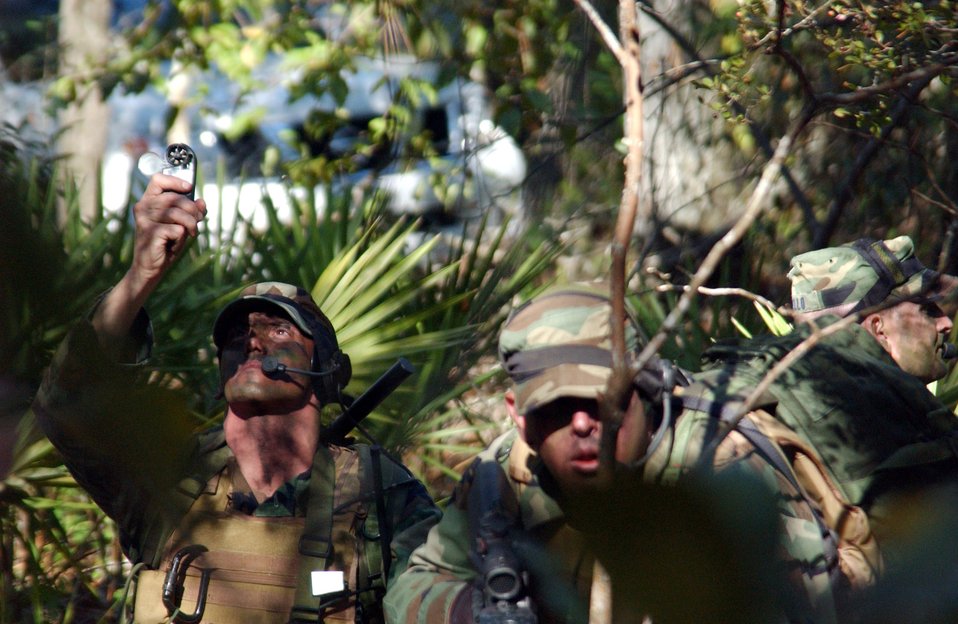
Front line forecast

HURLBURT FIELD, Fla. (AFPN) -- Tech. Sgt. Rick Rohde (left) takes a wind velocity reading while Staff Sgt. Jody Ball (center) and Tech. Sgt. Jim Morello provide cover during a special operations weather team exercise near the base. The Airmen are with the 10th Combat Weather Squadron here.